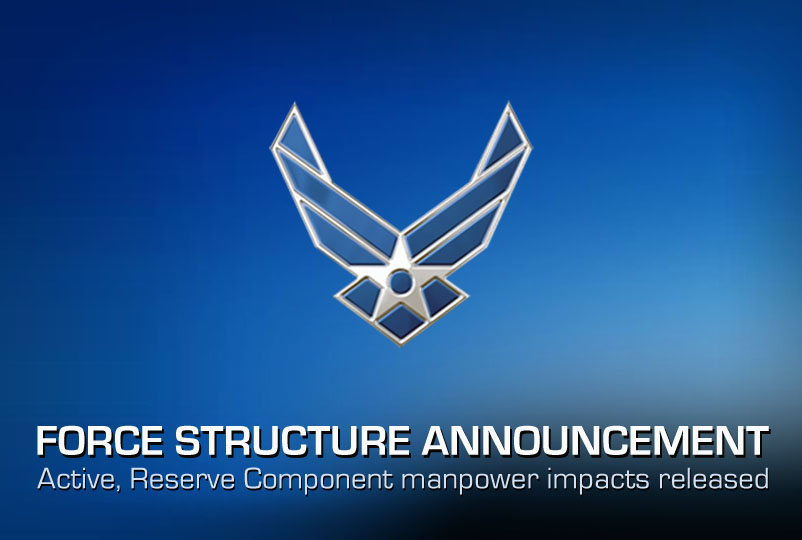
FY 13 structure change